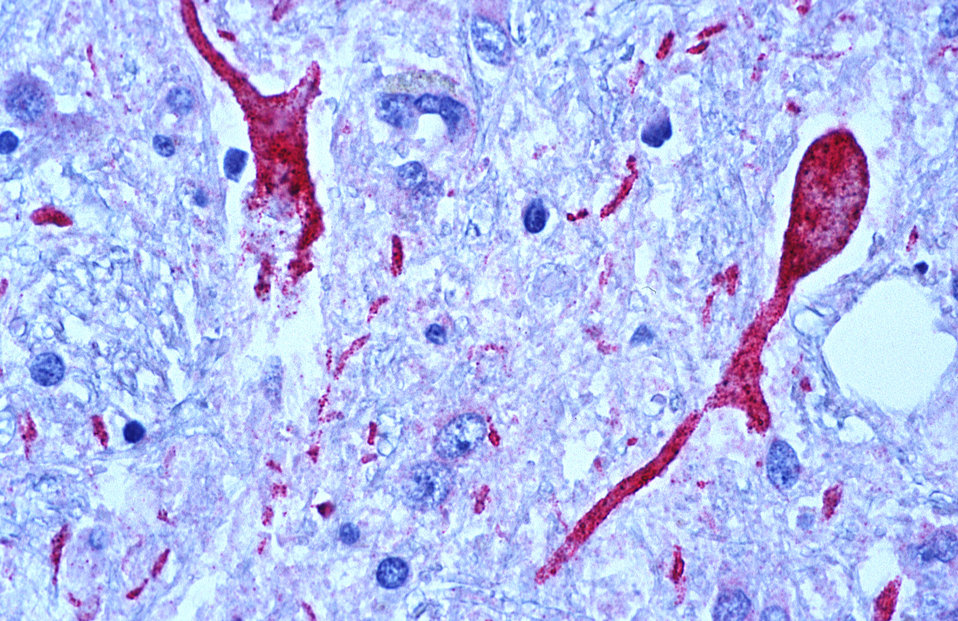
Brain tissue from a West Nile encephalitis patient.